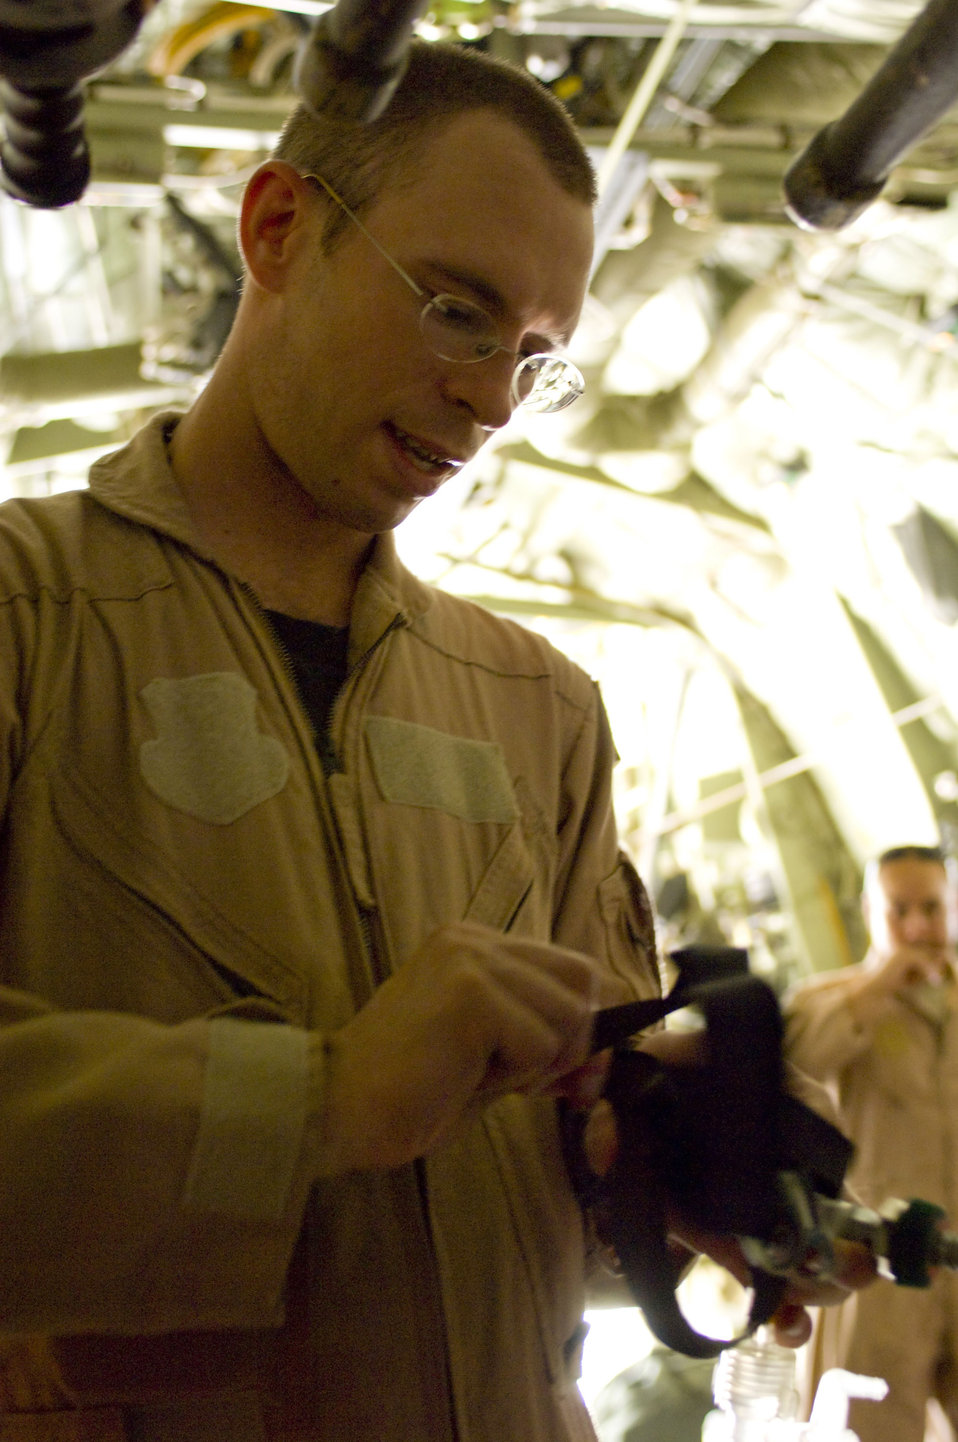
Airframes transform to 'aerovac'

Capt. Matthew Rist hooks up oxygen in a C-130 Hercules July 8 at Bagram Air Field, Afghanistan. Captain Rist, a member of the 455th Expeditionary Aeromedical Evacuation Flight, prepared the medical supplies during the C-130's conversion for an aeromedical evacuation mission. The team is deployed from the 375th Aeromedical Evacuation Squadron at Scott Air Force Base, Ill.